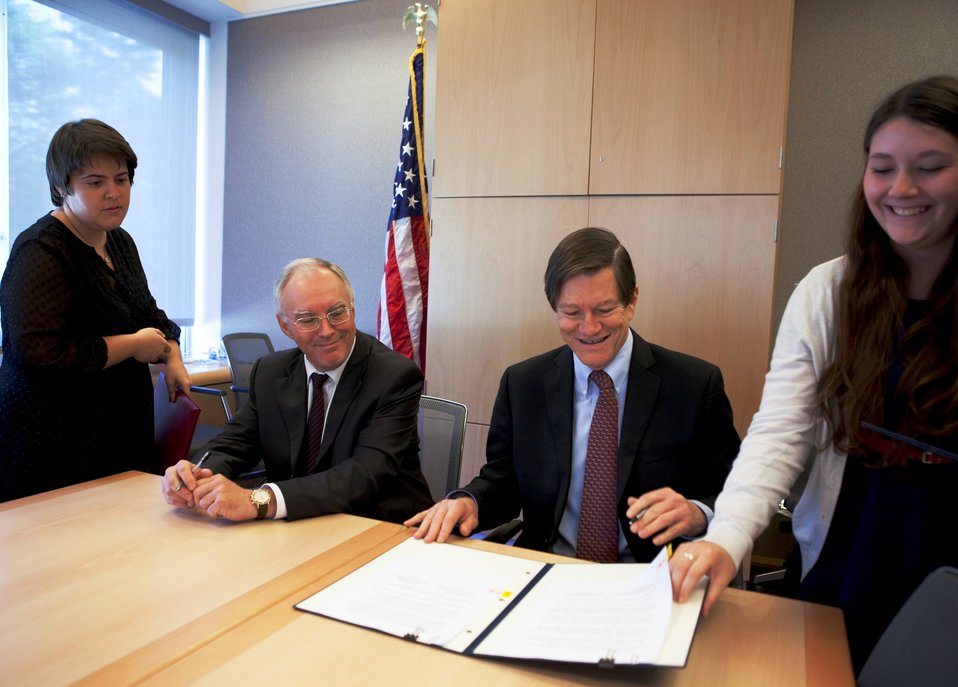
Russian Commissioner Leontyev and Ambassador Ordway Discuss Treaty Implementation

From left to right, Vladimir Leontyev, Russian Commissioner to the New START Treaty’s Bilateral Consultative Commission (BCC), and Ambassador John Ordway, U.S. Commissioner to the New START Treaty’s Bilateral Consultative Commission, discuss treaty implementation at the U.S. Mission in Geneva, Switzerland, September 21, 2012. The New START Treaty’s Bilateral Consultative Commission met from September 11 to September 21 to discuss treaty implementation. It is the fourth New START BCC session between the United States and Russia since the Treaty entered into force on February 5, 2011.